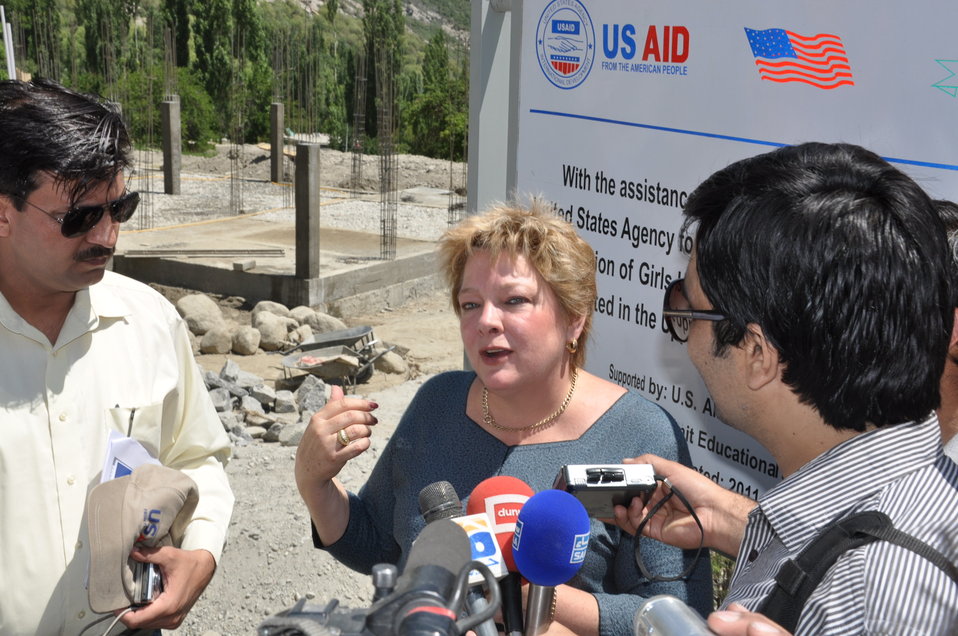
Deputy Director Karen Freeman (USAID) talks to the media at construction site of Girls Hostel, Gulmit.

In Gulmit, Deputy Mission Director Karen Freeman visited with students, parents, and teachers who are benefitting from the construction of a hostel for female students in a disaster-hit area of Hunza. At least 40 female students will stay in the hostel every year. Freeman toured the school and met with students, where she emphasized that the United States government is committed to not only helping communities rebuild after disasters like the 2010 floods, but also to improving access to quality education and teachers.